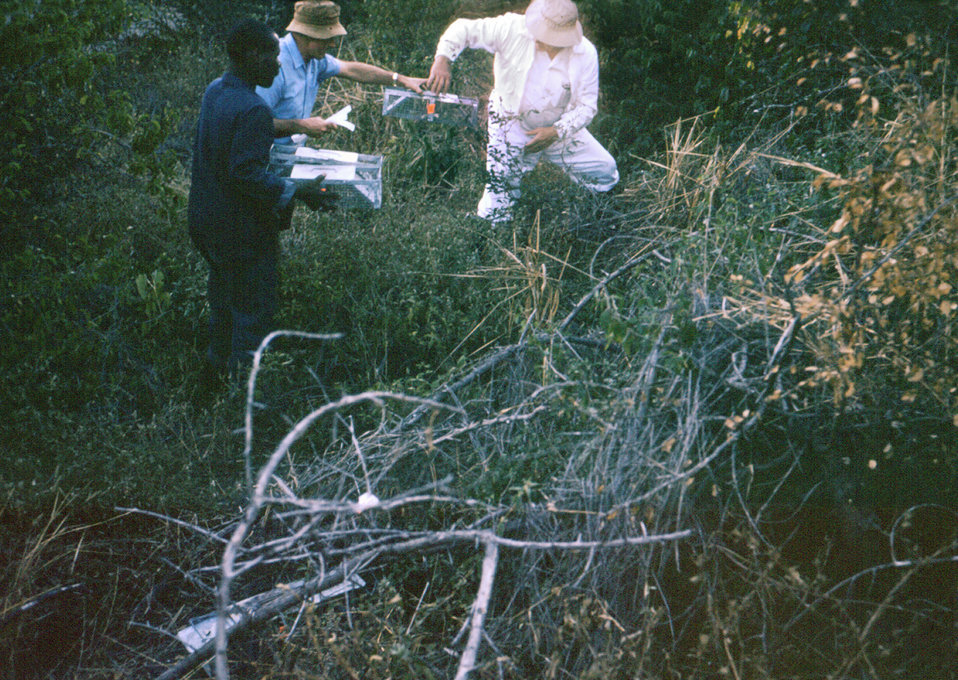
This photograph was taken near a Wankie, Rhodesia (now Zimbabwe) roadside where a Marburg vector investigation took place in 1975.